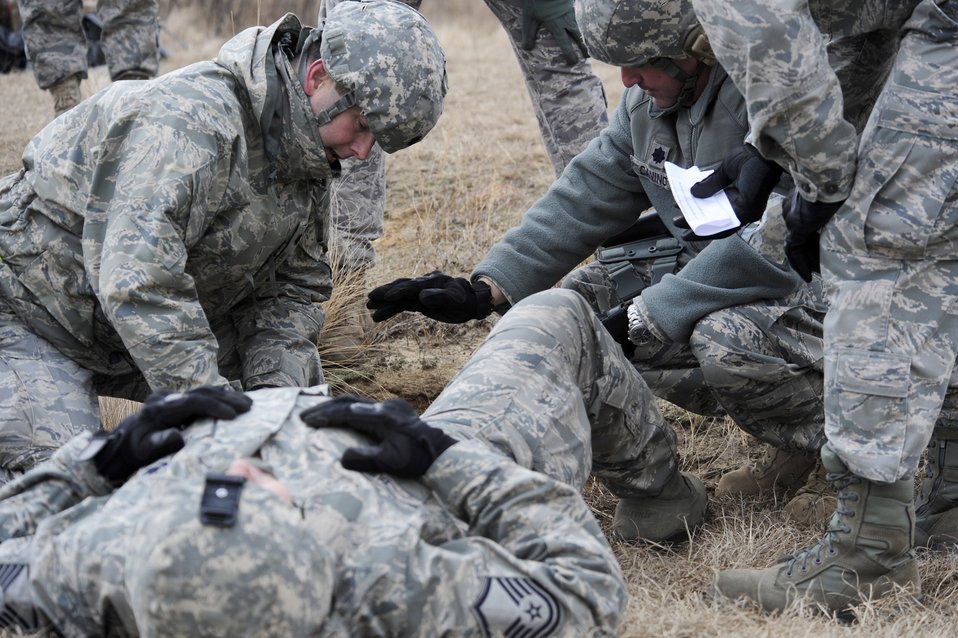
Joint operational access exercise

An Airman from the 570th Global Mobility Readiness Squadron